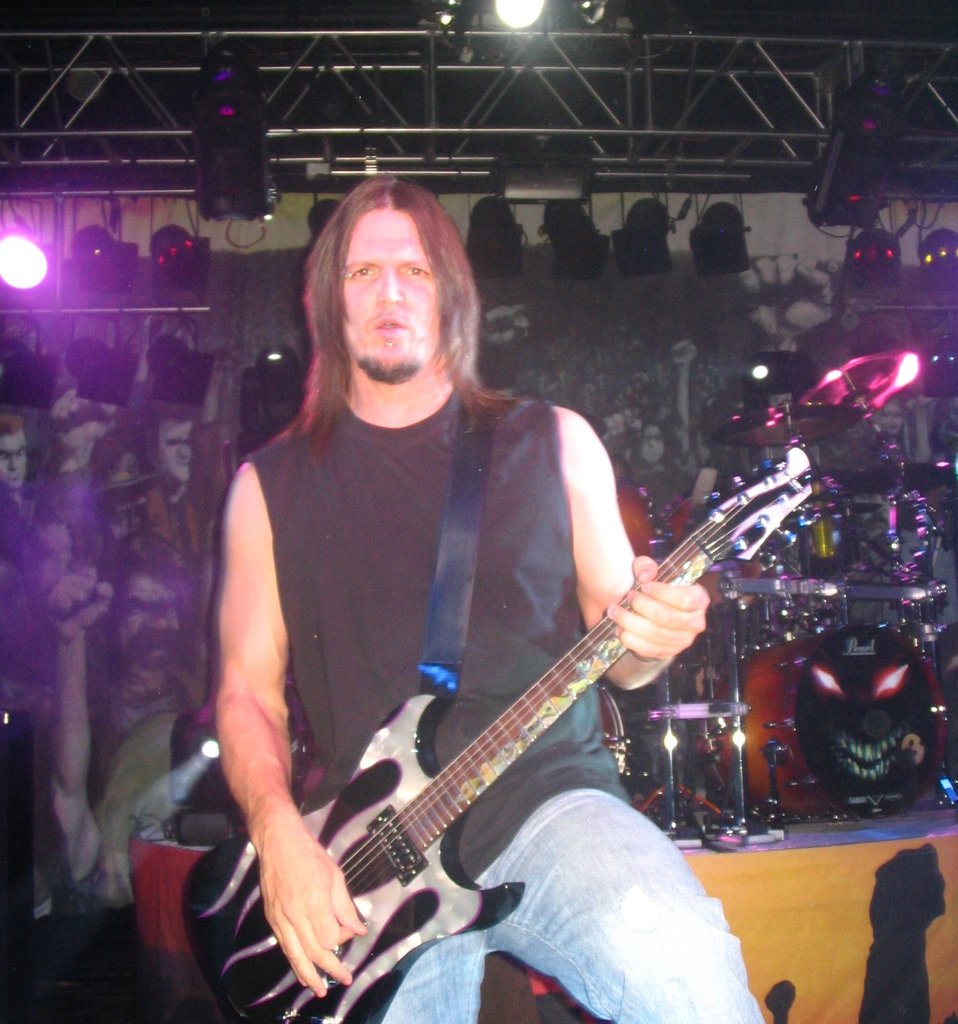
Picture of Dan Donegan, taken on December 8, 2005 at Starland ballroom.